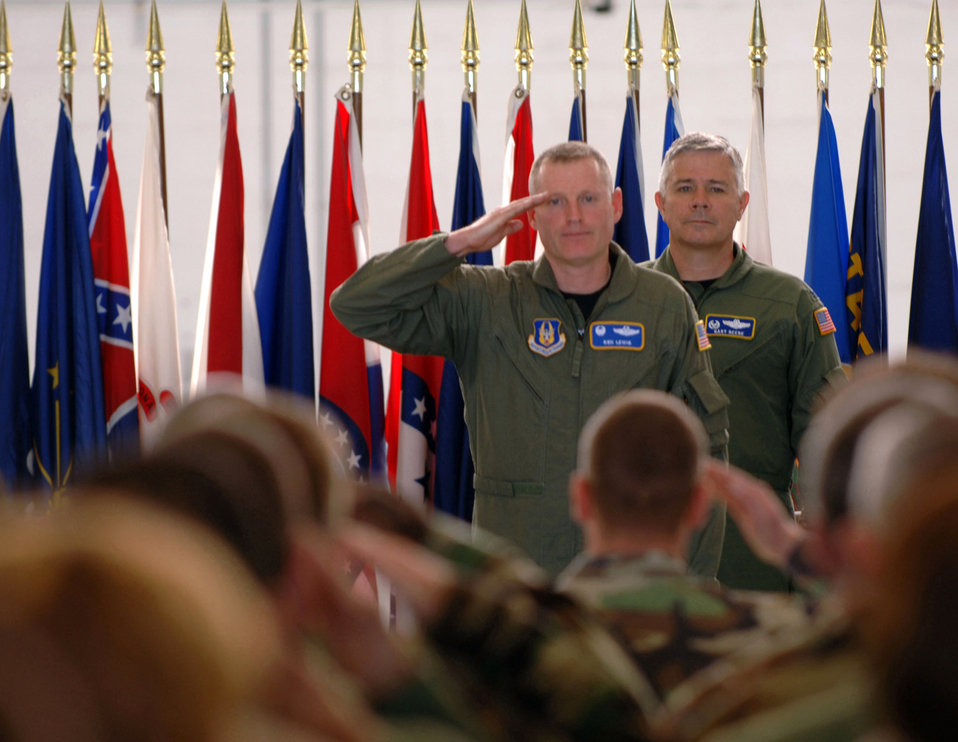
Reserve KC-135 wing moves from Michigan to Florida

Col. Kenneth Lewis salutes the men and women of the 927th Air Refueling Wing at MacDill Air Force Base, Fla., April 27, after accepting command of the unit from Col. Gary Beebe. Colonel Beebe returned to Selfridge Air National Guard, Mich., to command 4th Air Force, Detachment 2, which will handle Air Force Reserve activity at that base until it is phased out in 2009.